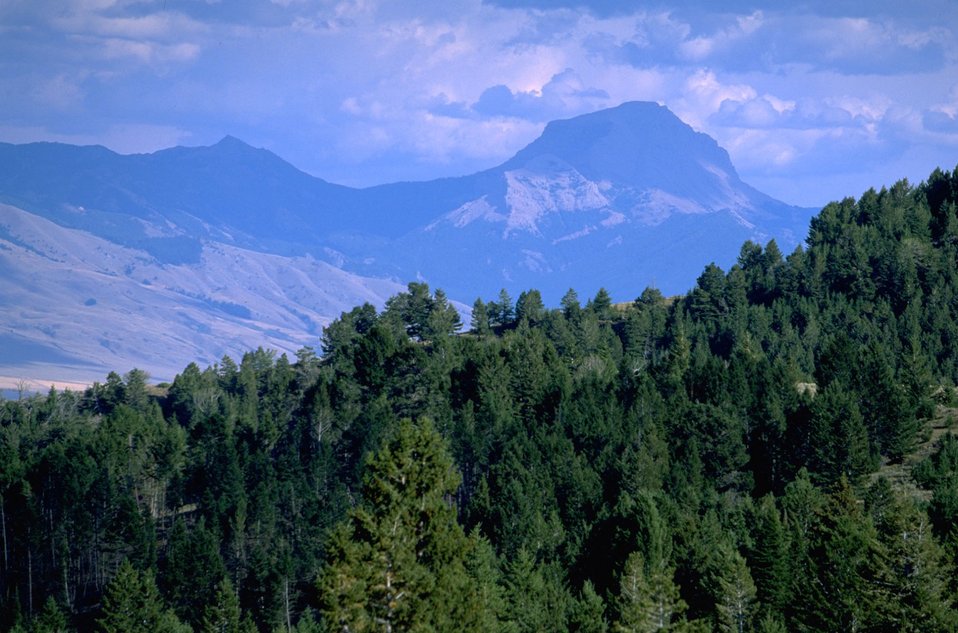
The Spinx